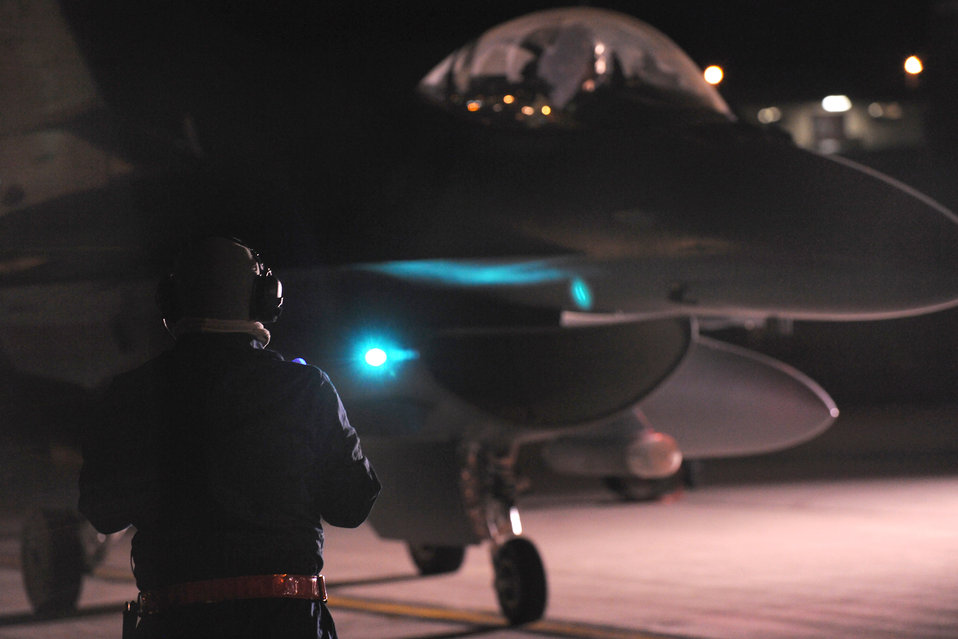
Falcons in Southwest Asia

A crew chief performs a function check with an F-16 Fighting Falcon pilot from the 480th Fighter Squadron just before takeoff May 2, 2011, from Spangdahlem Air Base, Germany, for the unit’s Air Expeditionary Force deployment.